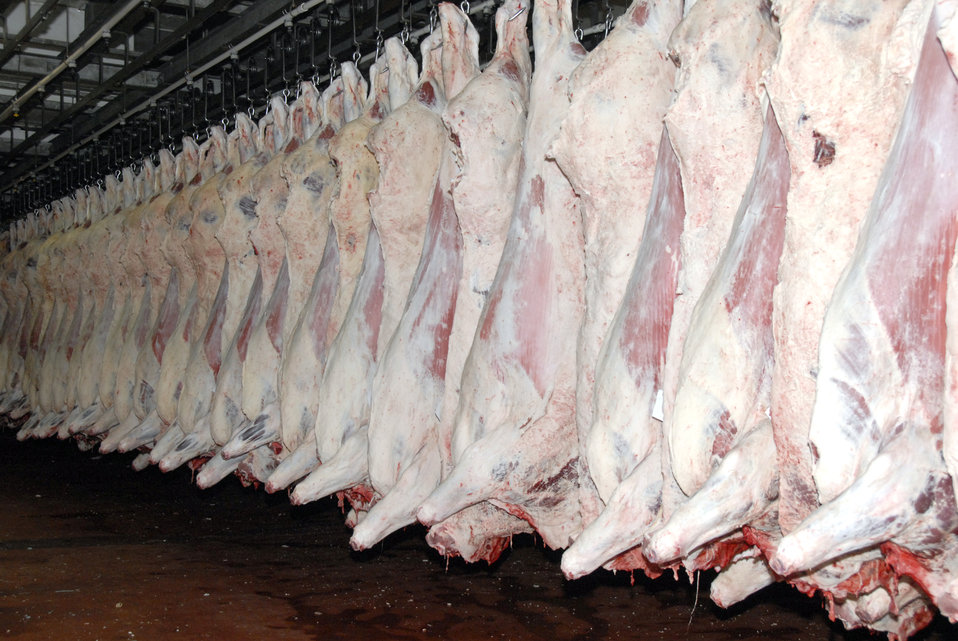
Sides of beef at the Sam Kane beef slaughterhouse in Corpus Christi, Texas on June 10, 2008 are stored in a refrigerated room. U.S. Department of Agriculture (USDA) Food Safety and Inspection Service (FSIS) inspectors examine the beef to ensure that it is safe for consumption.